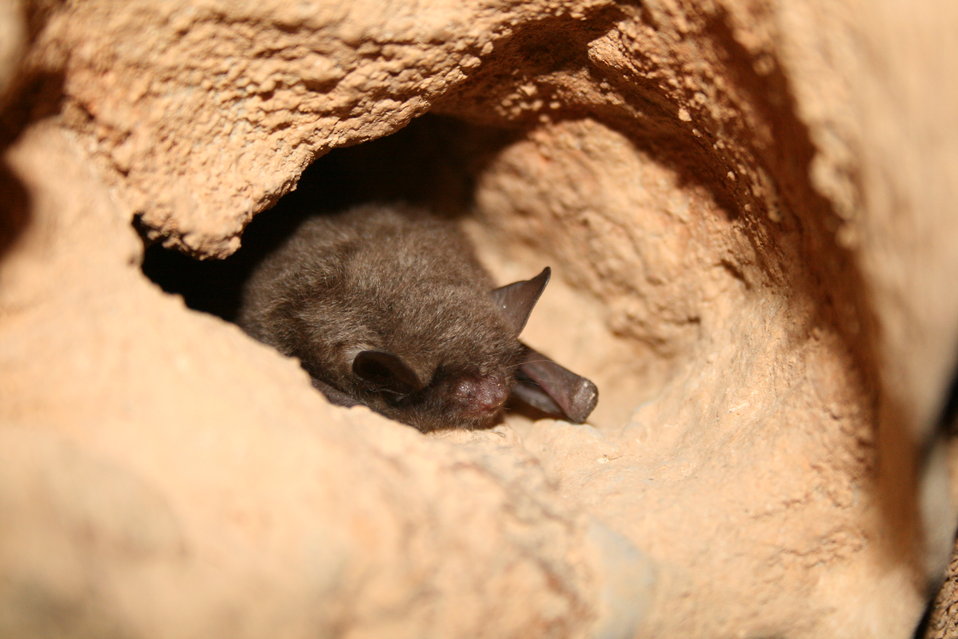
Indiana bat

Hibernating Indiana bat (Myotis sodalis)